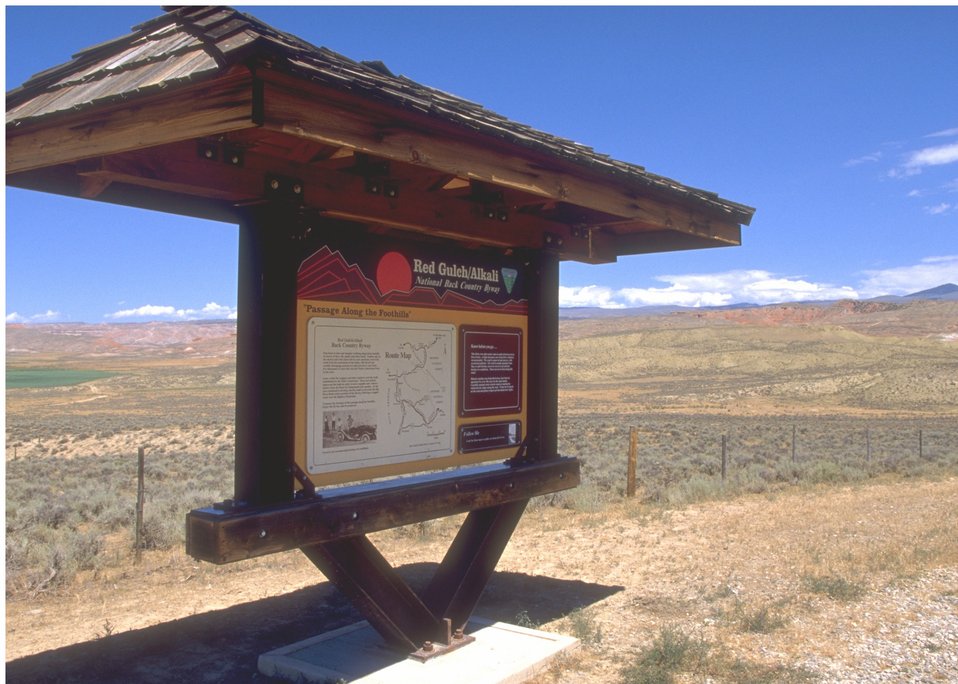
Red Gulch/Alkali Back Country Byway, Worland Field Office.